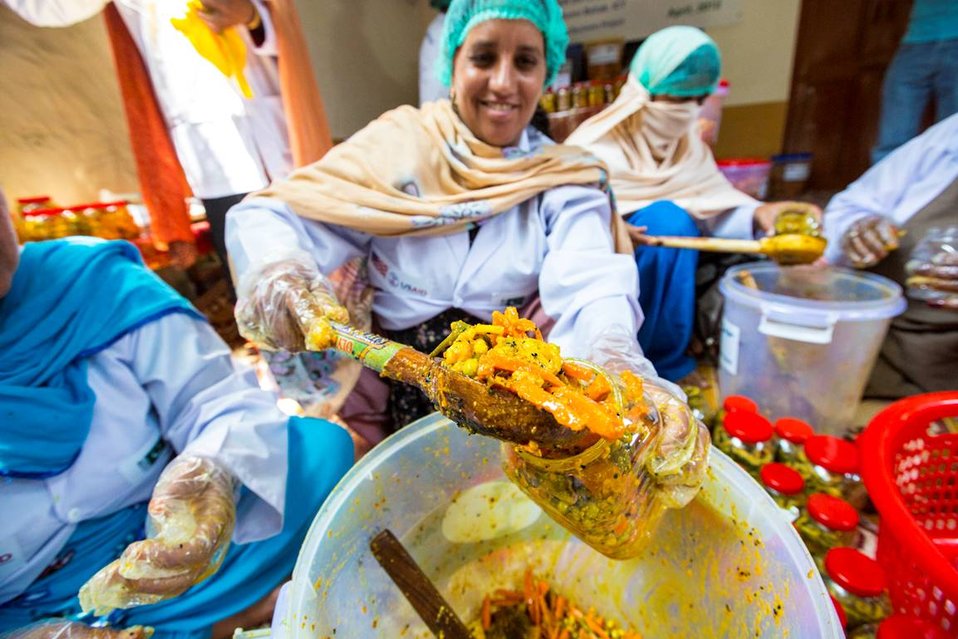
USAID's Agribusiness Project Women FEG for Food Processing - Pickle Production at Village Jabbi

www.usaid.gov/pk/db/sectors/growth/project 750.html